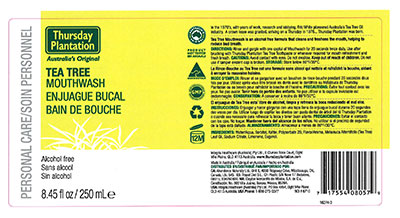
RECALLED - Cosmetic mouthwash

April 3, 2014 – Product Recall – Natural Organics, Inc. Recalls One Lot of THURSDAY PLANTATION TEA TREE MOUTHWASH Due to Bacterial Contamination.